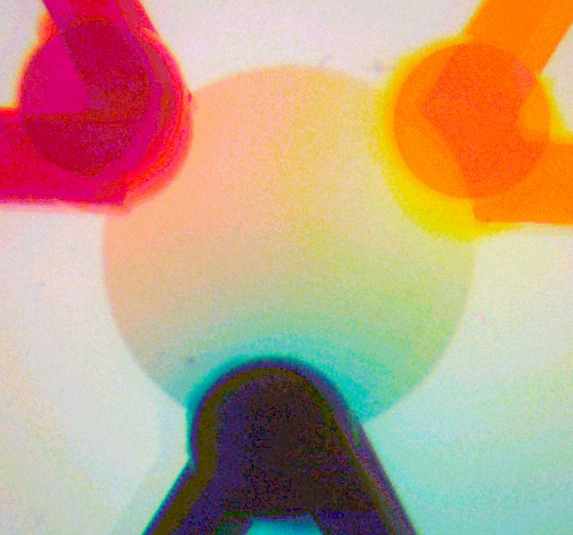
Microfluidic palette

For each of the three dyes injected into the NIST microfluidic palette, an independent gradient forms that remains constant as long as flow into the system does not change. Overlapping the three gradients results in a blend of dye concentrations, but the combination of colors in any single location is distinctly different from all others location.